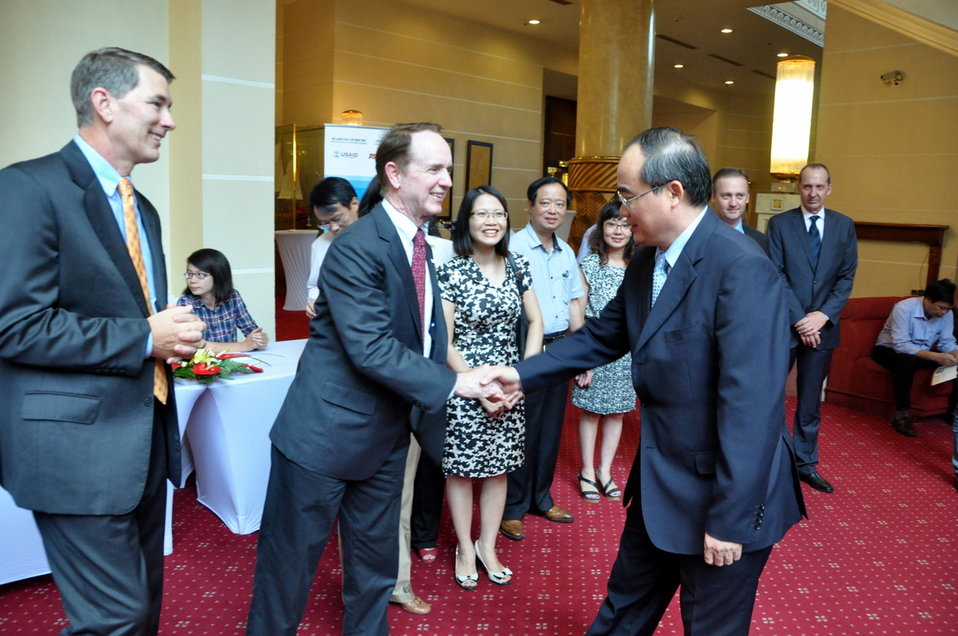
Higher Engineering Education Alliance Program Expansion Launch

Hanoi, August 20, 2012.